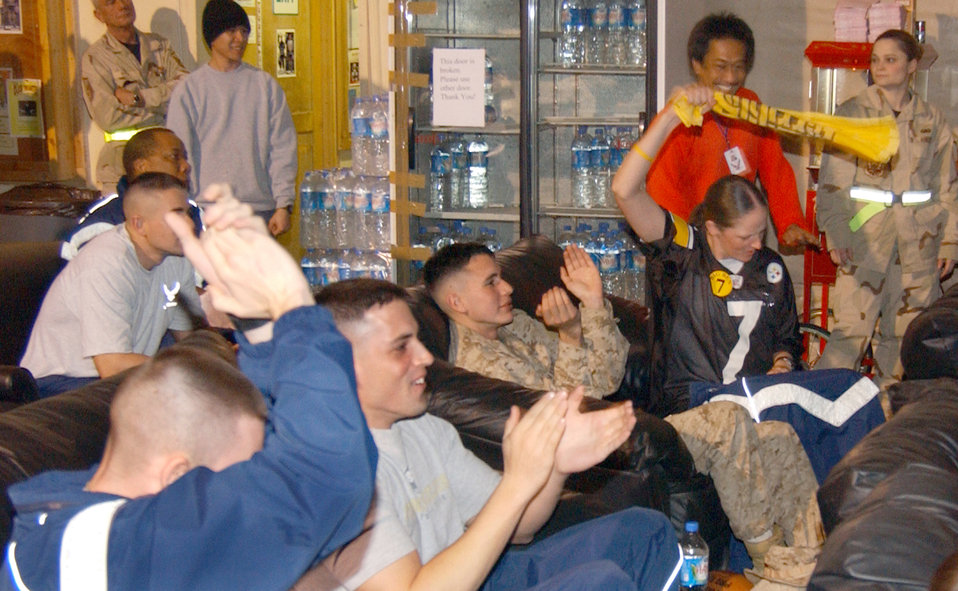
Super Bowl in Southwest Asia

BALAD AIR BASE, Iraq (AFPN) -- Servicemember football fans celebrate in the recreation tent here during Super Bowl XL. The Pittsburgh Steelers defeated the Seattle Seahawks 21-10 in Sunday's game.